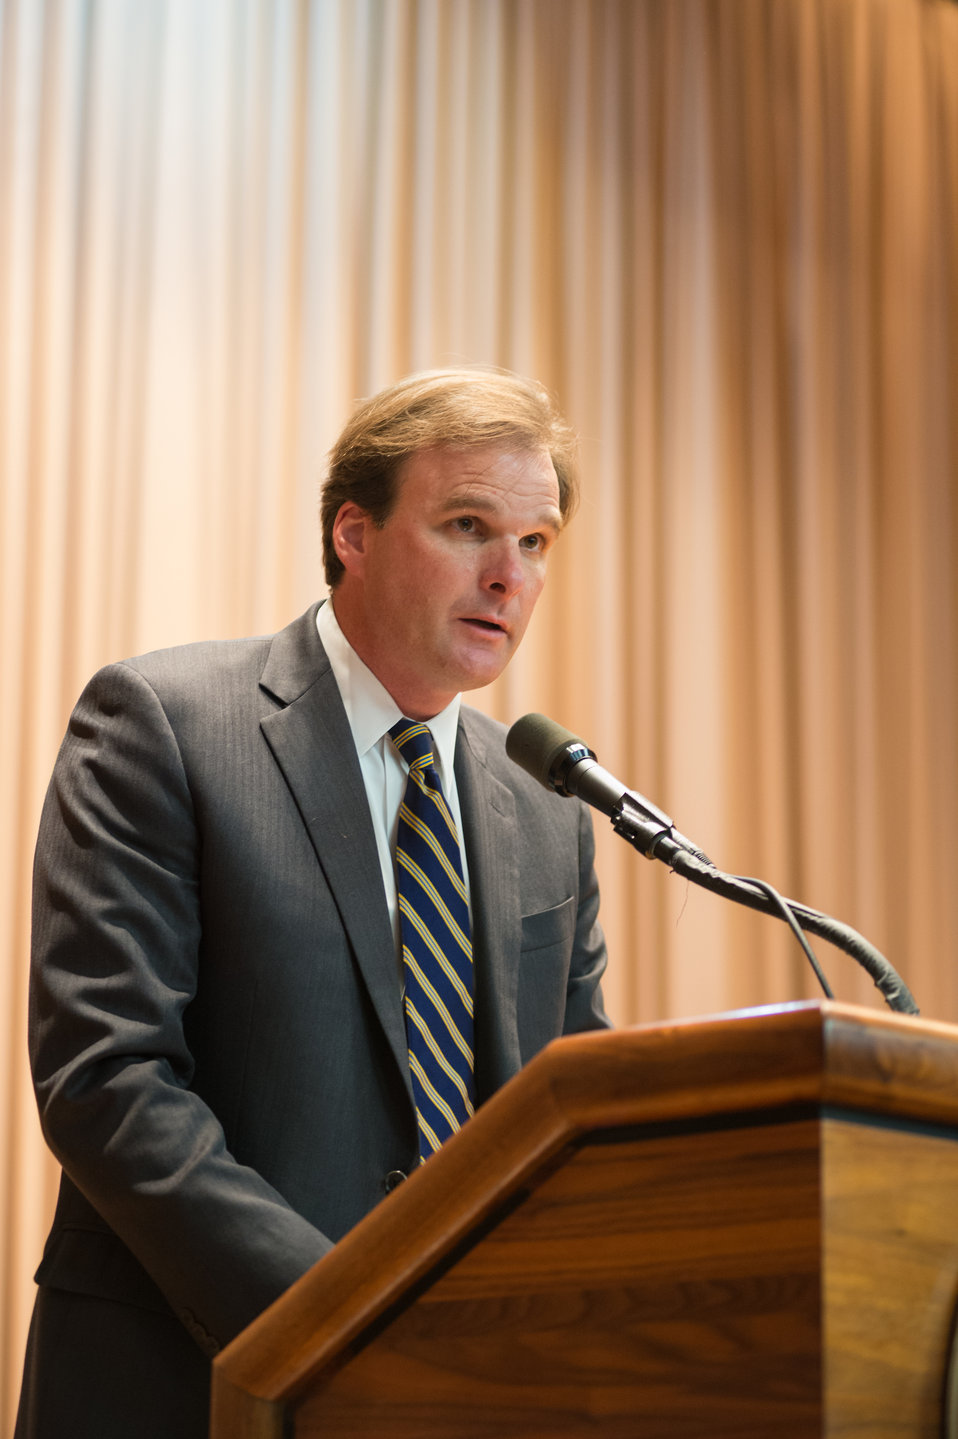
U.S. Department of Agriculture (USDA) Natural Resources and Environment Under Secretary Robert Bonnie makes opening remarks and swore in six new employees USDA, Karen Biala, Food and Nutrition Service, Mai Dinh, Office of General Council, Jane Doherty, Food Safety Inspection Service, Duane Howard, Agricultural Research Service, Michelle Mills, Natural Resources Conservation Service and Brian Leake, Agricultural Research Service at the Asian Pacific American Heritage Observance at USDA in Washington, D.C. on Thursday, May 22, 2014.